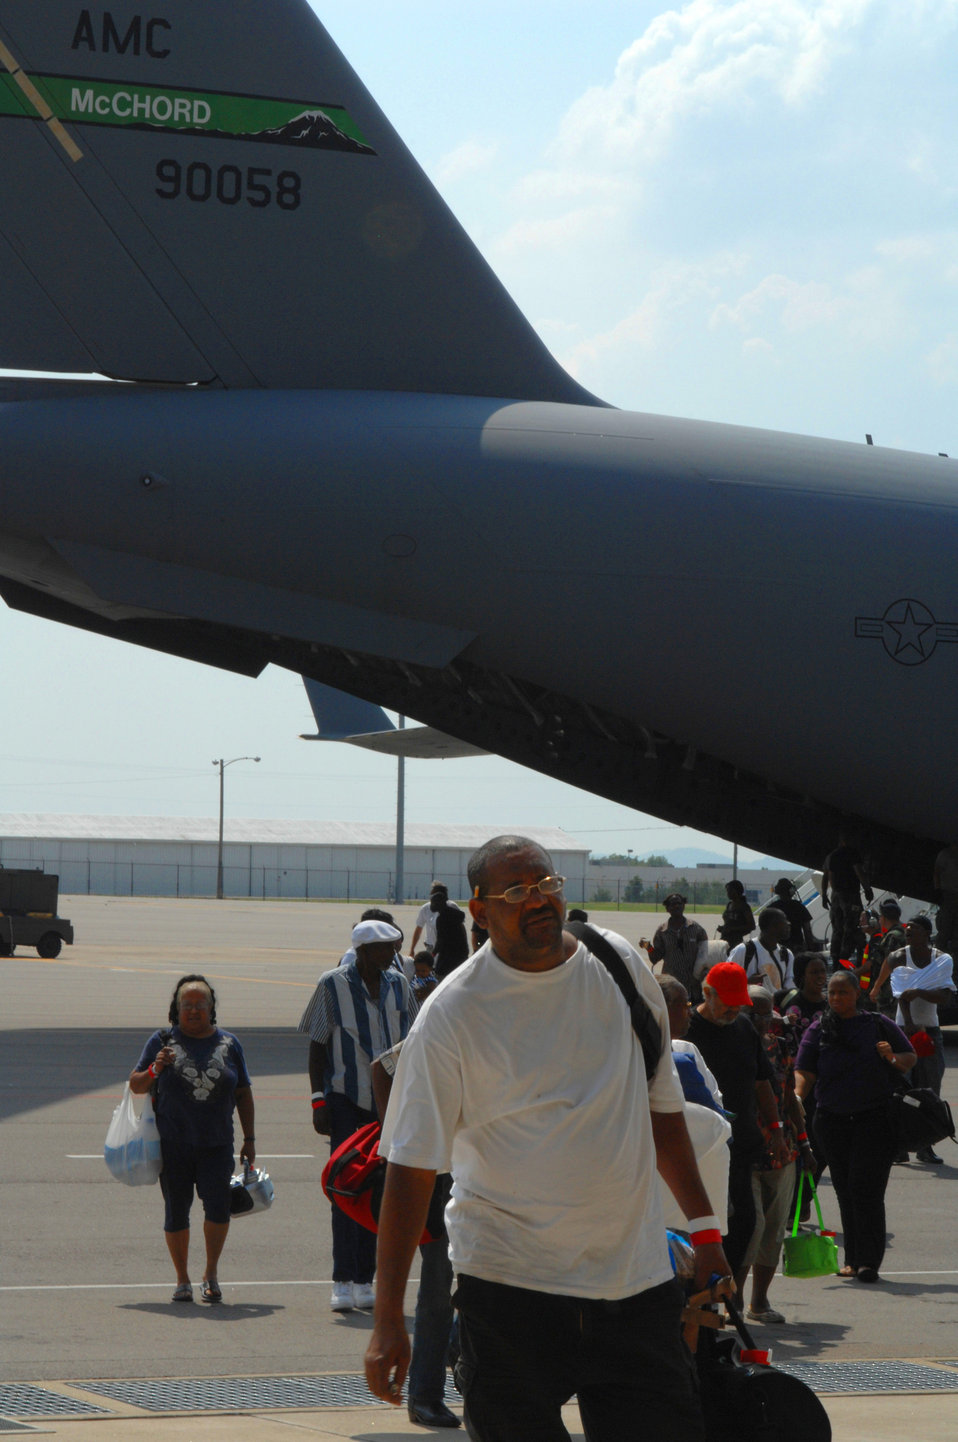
Hurricane Gustav evacuation

Hurricane Gustav evacuees from New Orleans step off a C-17 Globemaster III from McChord Air Force Base, Wash., Aug. 31 after being transported out of harm's way. To date, Air Mobility Command units have transported more than 6,500 Gustav evacuees to safety. The evacuees were sent to various locations throughout the United States, where relief teams were waiting with food, water and shelter.